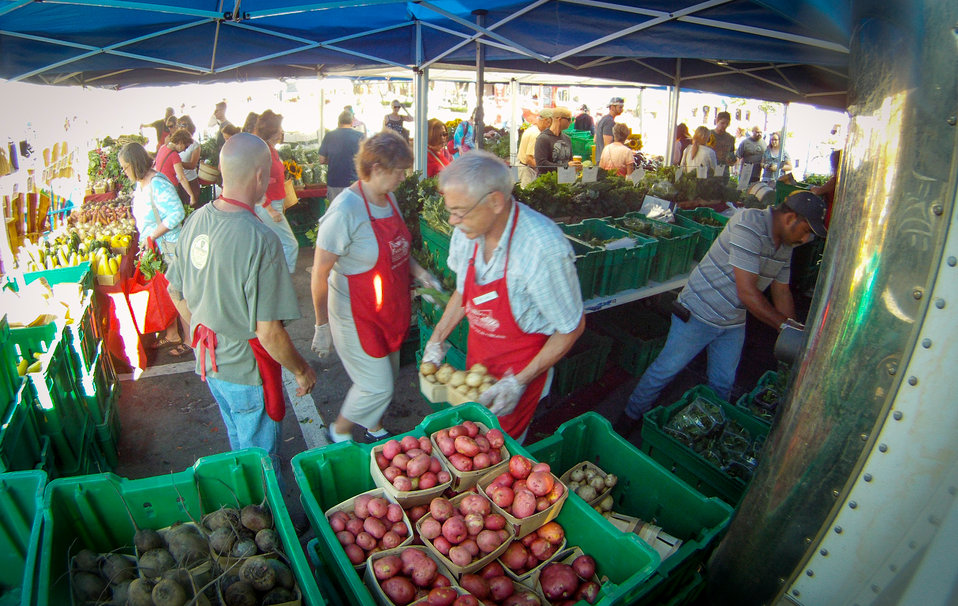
Worden Farm's (www.wordenfarm.com) (L - R) Rick and Doris Lovering, Philip Kemp and Carlos Mendes spends the entire day keeping stocks on the tables, educating customers about organic vegetables, and bagging organic leafy greens that were harvested the day before at the Saturday Morning Market, in St. Petersburg, FL on April 14, 2012. Worden Farm is a family farm that provides certified organic produce to Southwest Florida through community supported agriculture (CSA) membership programs and retail sale at several farmer’s (community) markets. Chris Worden, Ph.D. and Eva Worden, Ph.D. founded and operates the farm that employs more than 20 people. Growing certified organic crops in the coastal sandy soil has required them to develop innovative farming techniques. These techniques help the farm as well as help the studies of universities and farm industry. There are several Worden Farm apprenticeships that provide hands-on training in all aspects of the farm, to include direct marketing at the Saturday Morning Market, or other market sites. The farm also holds culinary and gardening workshops, and other interactive educational events. One of their organic certifications is from the U.S. Department of Agriculture (USDA) and they have partnered with the USDA Natural Resources Conservation Service (NRCS) for soil conserving windbreaks and long tunnel structures to nurture seedlings and extend the growing season.